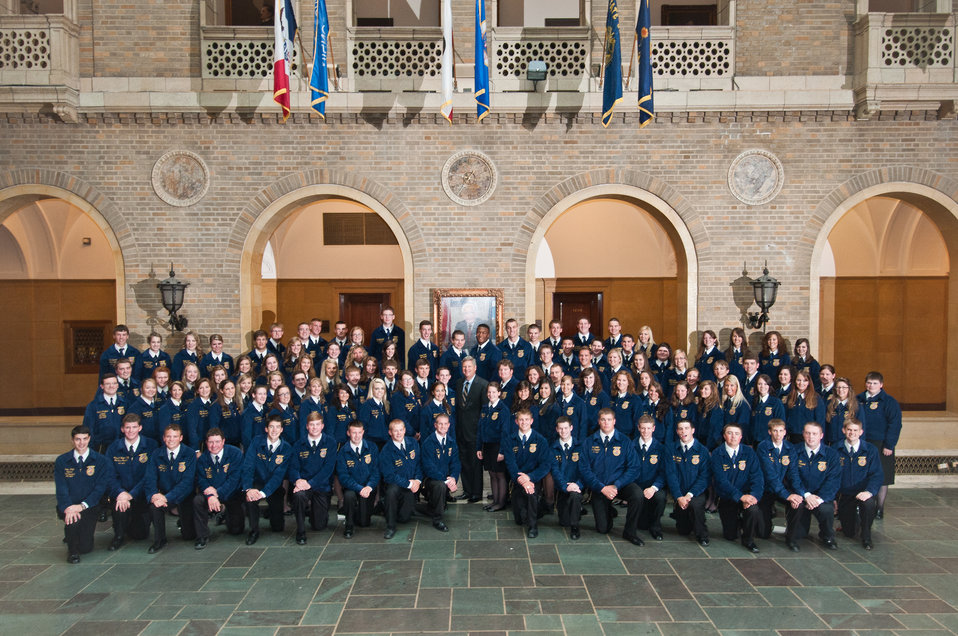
Agriculture Secretary Tom Vilsack (center) with members of the National Future Farmers of America (FFA) on Thursday, July 28, 2011 on the patio of the U.S. Department of Agriculture in Washington, DC.